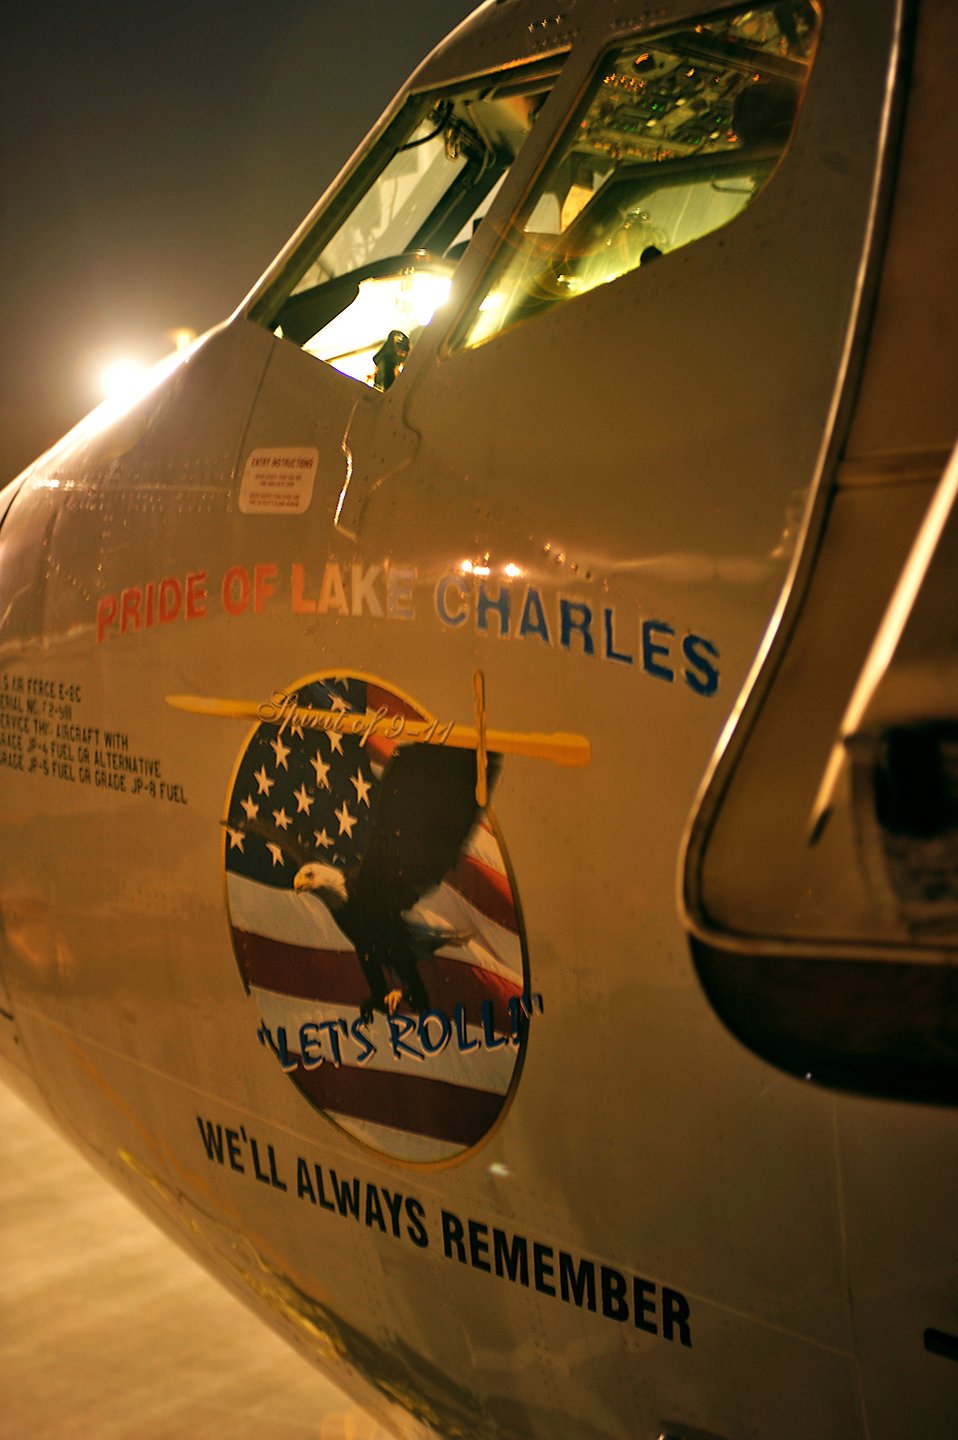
40,000 combat hours

An E-8C Joint Surveillance Target Attack Radar System aircraft from the 7th Expeditionary Air Combat and Control Squadron sits on the ramp at an air base in Southwest Asia Sept. 1 before a mission over Iraq. The flight will mark 40,000 combat hours supporting the war on terrorism for the deployed Airmen of the 116th Air Control Wing. The E-8C JSTARS is an airborne battle management, command and control, intelligence, and reconnaissance aircraft.